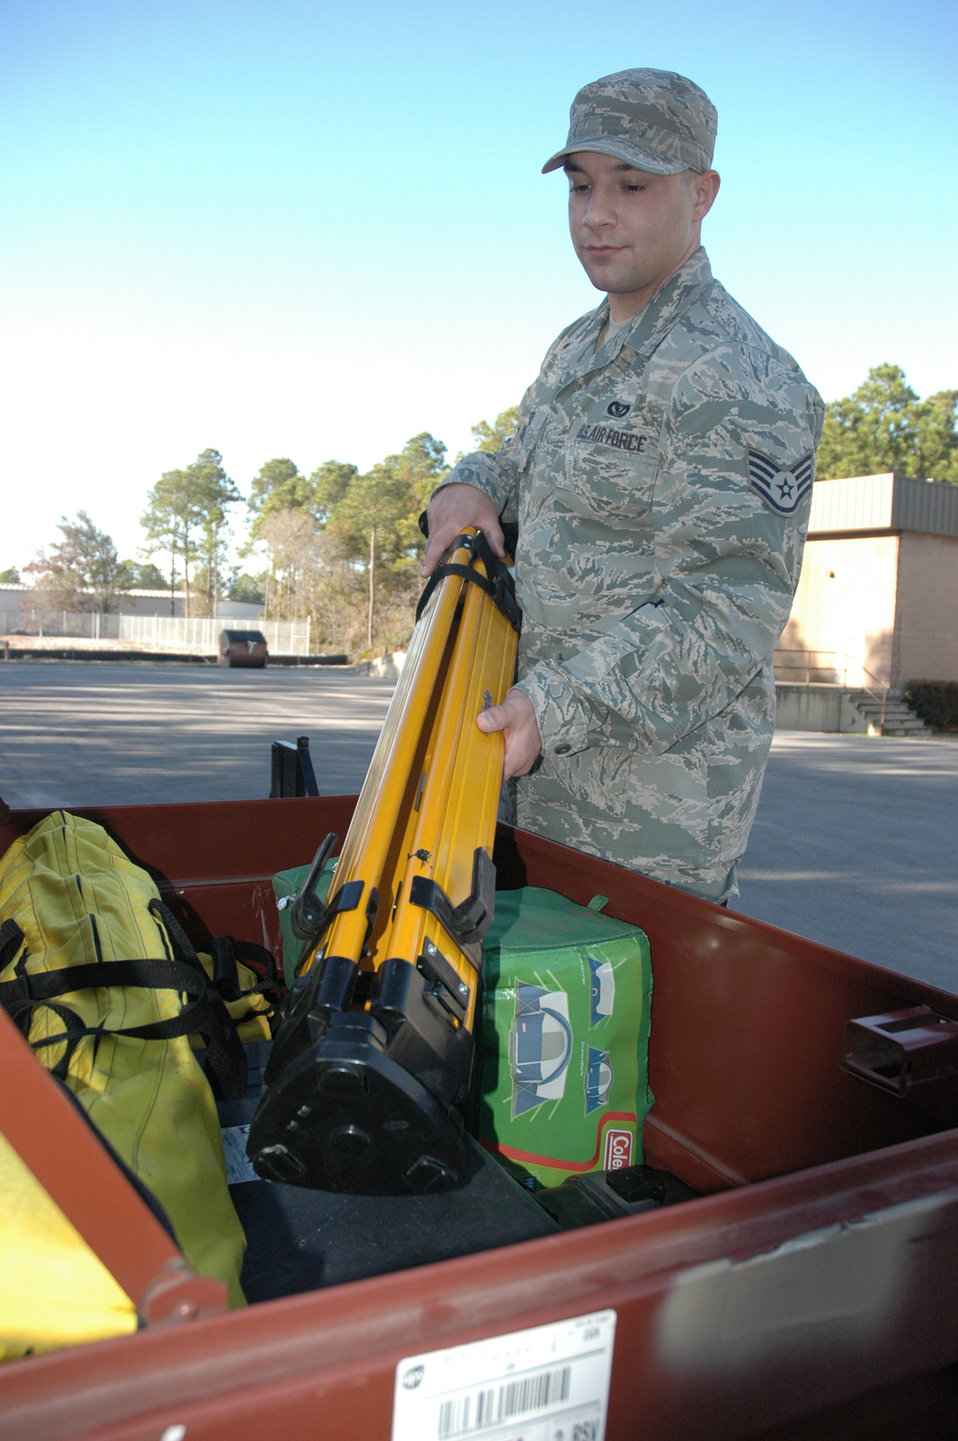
Pavement Evaluation

Staff Sgt. Thomas Wyatt, an airfield pavement evaluation technician at Tyndall Air Force Base, Fla., loads GPS equipment Jan. 25, 2010, that will be used to evaluate airfields throughout Haiti.